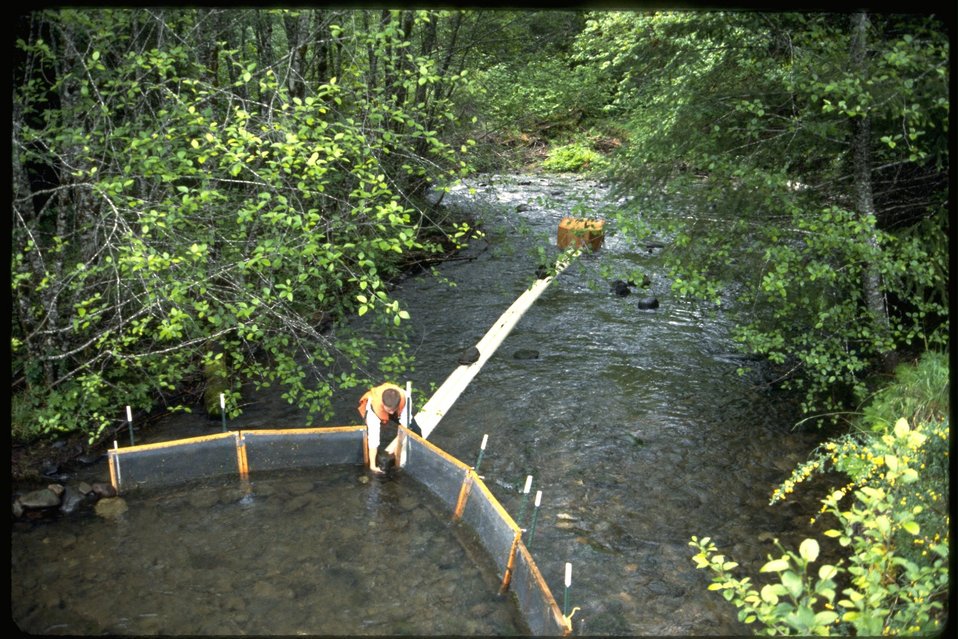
Catching smolts in an anadromous fish study.